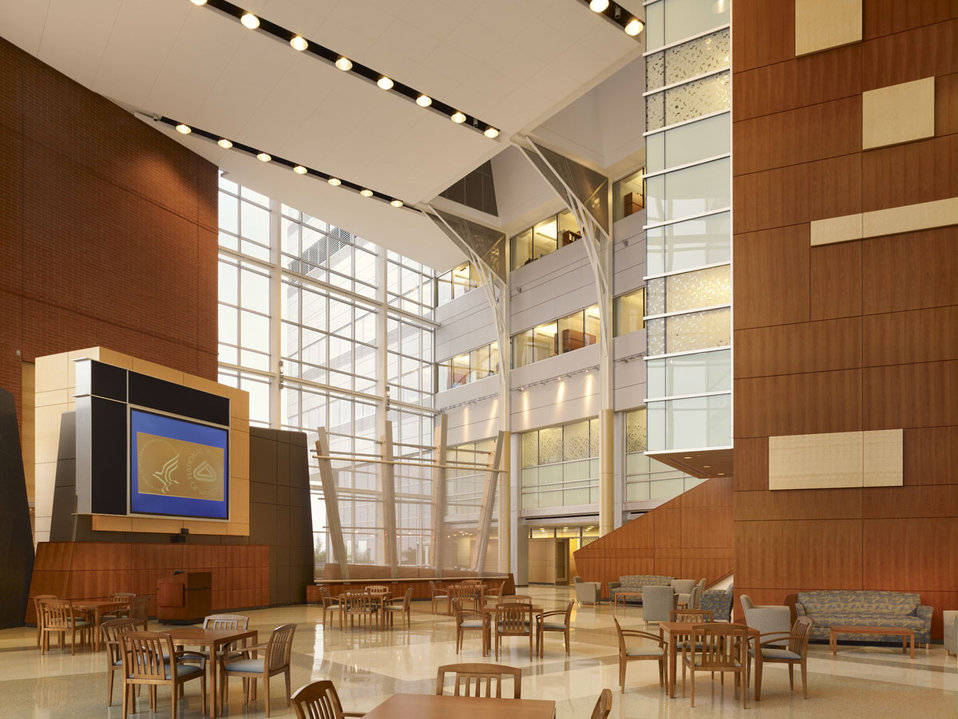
IRP interior